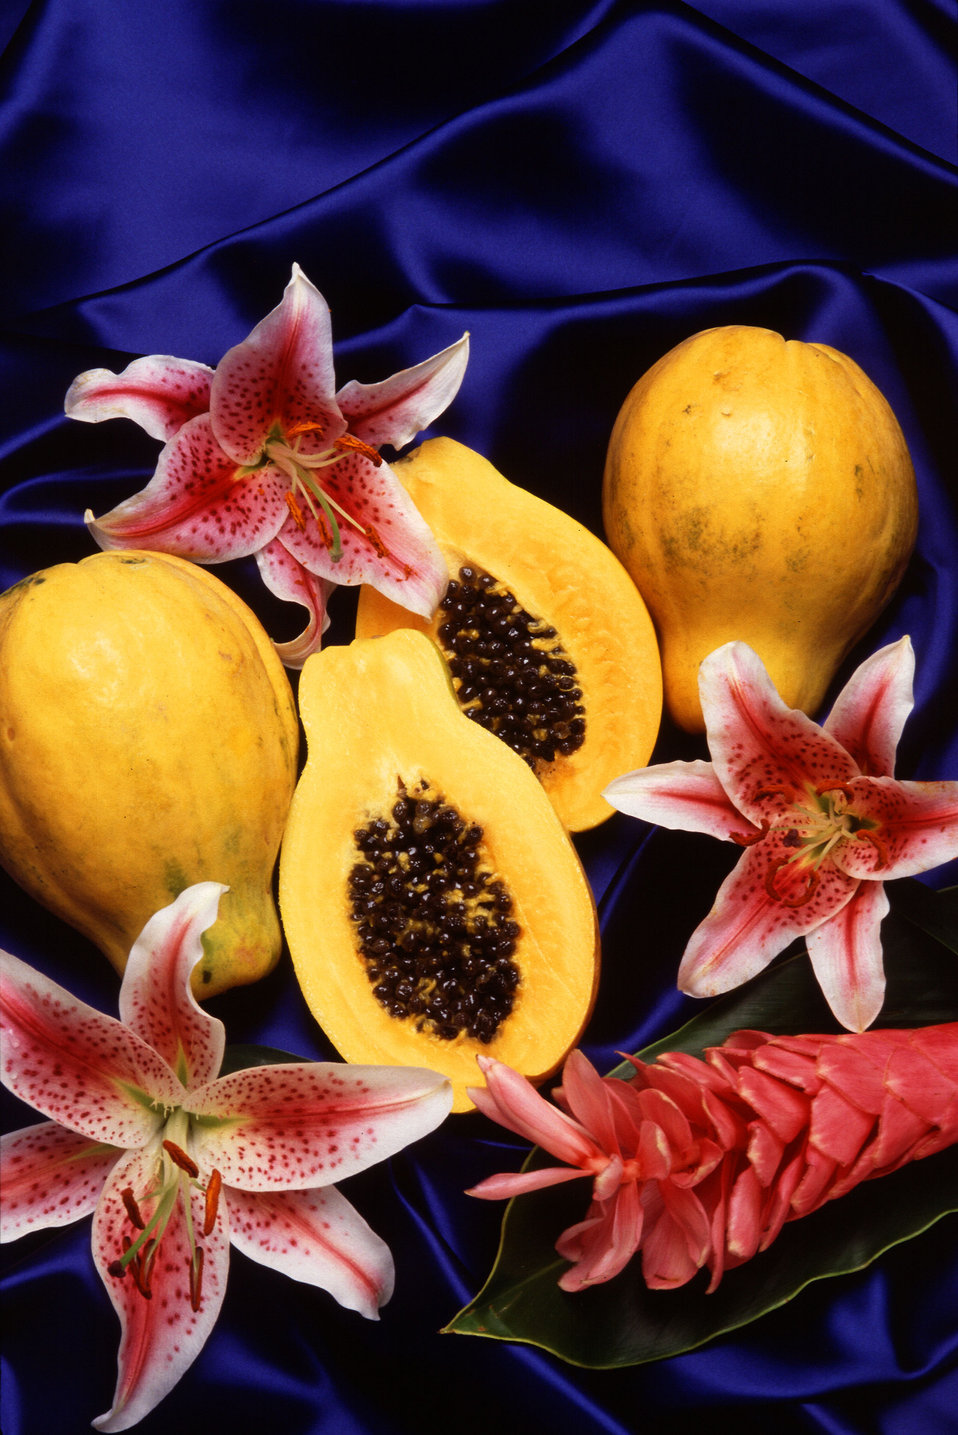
Hawaiian papayas (Carica papaya) are now a popular fruit enjoyed by many Americans.